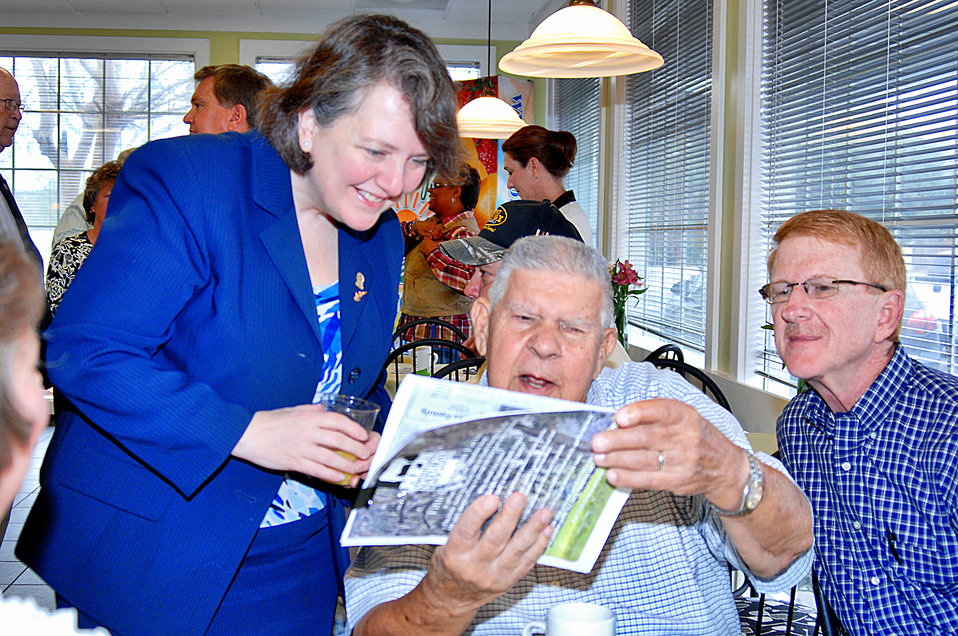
Agriculture Deputy Secretary Kathleen Merrigan meets with members of the at Fifth Generation Farms fresh market in Lake City, Florida on Friday, Jan, 27, 2012.